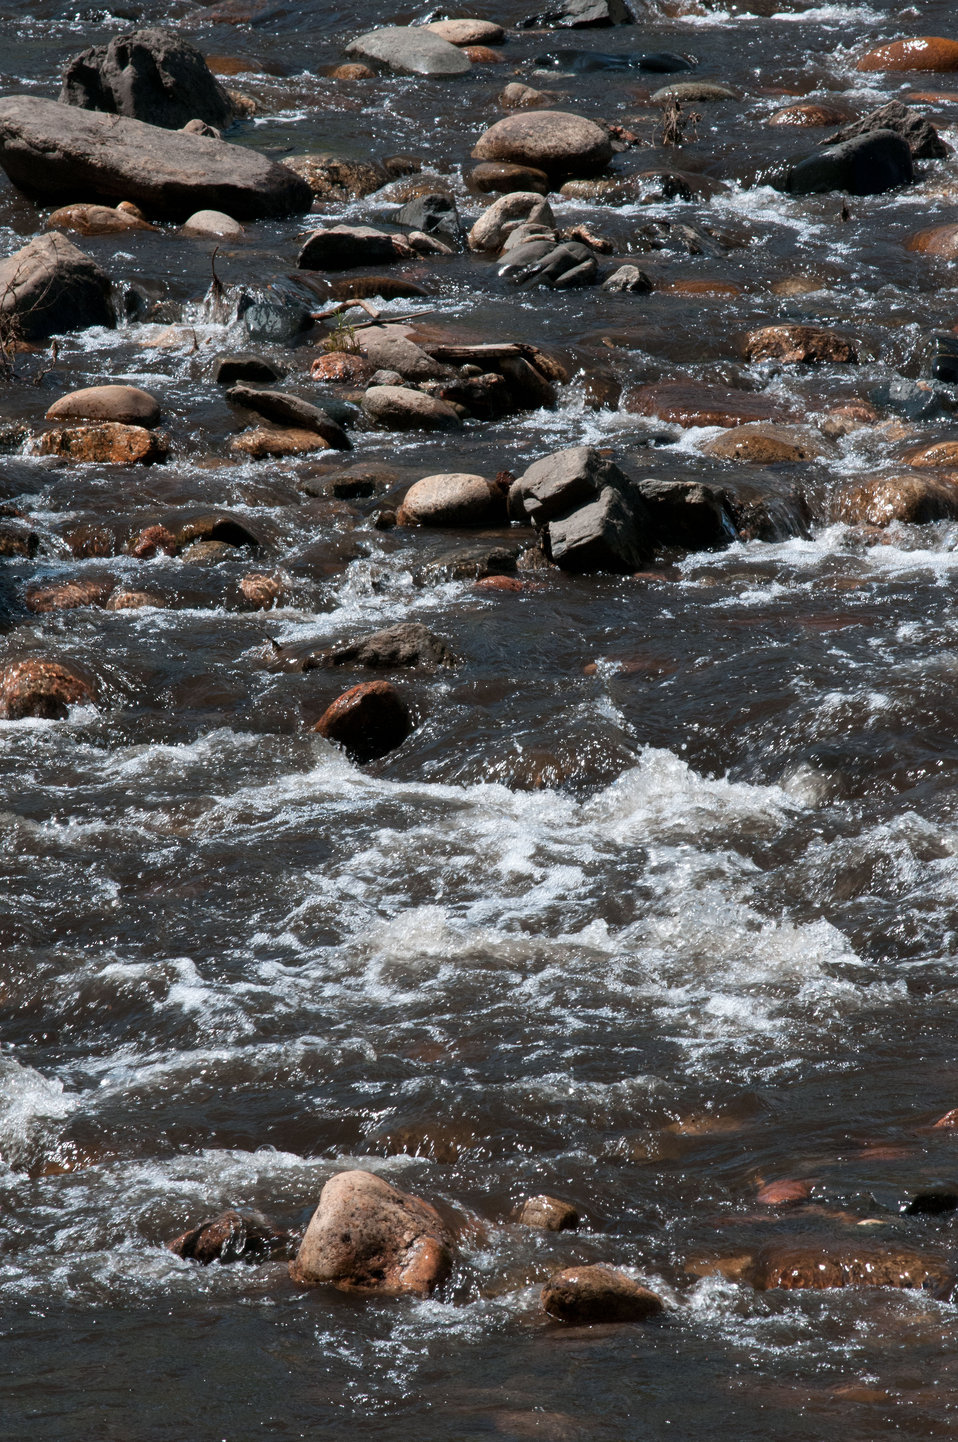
A confluence of two downstream tributaries, the Cache la Poudre and the North Fork of the Cache la Poudre, near Seaman Reservoir, 60 miles north of Denver, on Friday, July 20, 2012, near Fort Collins, Colorado, have been transformed from famously clear mountain waters to a nearly black flows of water, heavily laden with ash, silt, and burnt debris that was recently washed down mountainsides by thunderstorms. The mountainsides were burned by the Hewlett Gulch Fire (May 14), in the Poudre Canyon area. At its peak more than 400 firefighters were battling fires pushed by 50 mph winds. When the last embers were cooled, more than 12-square miles lay blacked at a cost of approximately 3.2 million dollars to fight. The aerial distribution of straw has successfully kept nearby Seaman Reservoir clean for the drinking water of the City of Greeley. Forest Service lands receive straw, while private and other lands receive a seed mix and straw to promote ground cover plant growth on ash-covered lands. In total, 1,800 tons of straw will be applied during the 14-day operation. One quarter of the cost was paid by the City of Greeley and the U.S. Department of Agriculture funded the remainder.